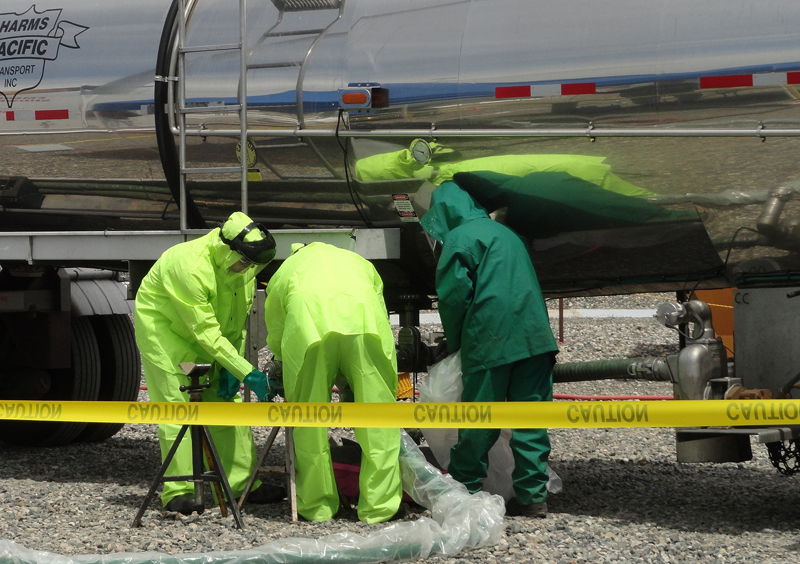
A tanker truck dispenses caustic into C-104, the third of three tanks now in the process of active solid waste retrieval.

For the first time; waste solids are in the process of being retrieved simultaneously from three underground tanks: C-104; C-107 and C-109.Crews are working to remove the last bit of hard heel waste from C-104. Tuesday; crews began a four-week recirculation of caustic in the tank after 15; 000 gallons of sodium hydroxide were added the previous week to begin dissolution of the remaining hard heel. During the recirculation period; the caustic will react with the gibbsite to create a water-soluble salt. After the reaction is complete; the remaining material will be pumped to double-shell tank AN-101 and C-104 will undergo a final rinse.To date; crews have used modified sluicing and hot water washes to remove more than 98 percent of the 259; 000 gallons of waste C-104 contained when retrieval began in January 2010. The Tri-Party Agreement requires that 99 percent of the waste is removed from the single-shell tanks or certain criteria are met regarding limits of technology.Meanwhile; the Mobile Arm Retrieval System (MARS) marches on in tank C-107; having removed nearly 66 percent of the tank’s contents. MARS’ robotic arm has used its high-pressure nozzles to break up waste in C-107 and sweep it to a pump for removal. Its mobility has allowed operators to quickly and skillfully maneuver around obstacles found in the tank that would normally set back retrieval efforts a number of weeks.A third tank; C-109; is in the middle of a water soak aimed to loosen and break down waste solids into a mobile form. Recent sampling shows the hard-to-remove heel is dissolving and slurry pump activities are forecast to occur in July or August. It’s estimated that less than 14 percent of the original starting volume of 63; 000 gallons remains in the tank.All this activity is in addition to the completion of retrieval activities earlier this year in tank C-108; which is awaiting review by the Department of Ecology.